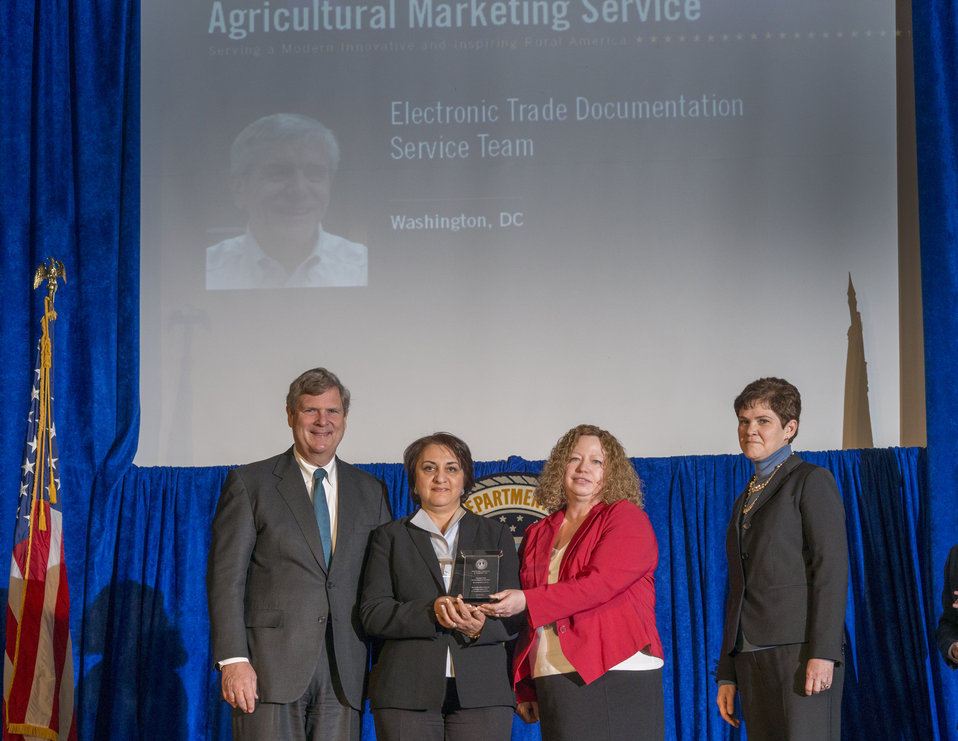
Agriculture Secretary Tom Vilsack and Agriculture Deputy Secretary Krysta Harden present the Secretary’s Honor Award to the Agricultural Marketing Service (AMS) Electronic Trade Documentation Service Team leaders Robert Fiduk (accepting Fariba Tacoukjou) and Lori Jean Tortora at the 2013 Secretary's Honor Awards in the Jefferson Auditorium at the U.S. Department of Agriculture (USDA) in Washington, D.C. on Wednesday, Dec. 11, 2013.